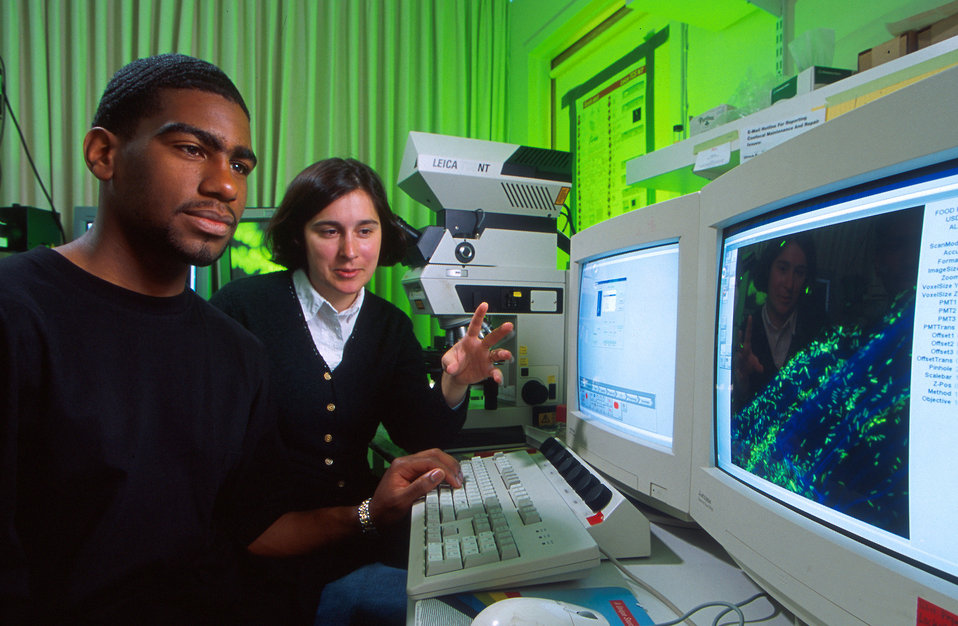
U.S. Department of Agriculture (USDA) Agricultural Research Service (ARS) microbiologist Amy Charkowski and graduate student Abdulah Harris observe the display of a confocal microscope being used to examine an alfalfa sprout root that has been experimentally contaminated with Salmonella. The microbes show up green or blue on the computer screen.